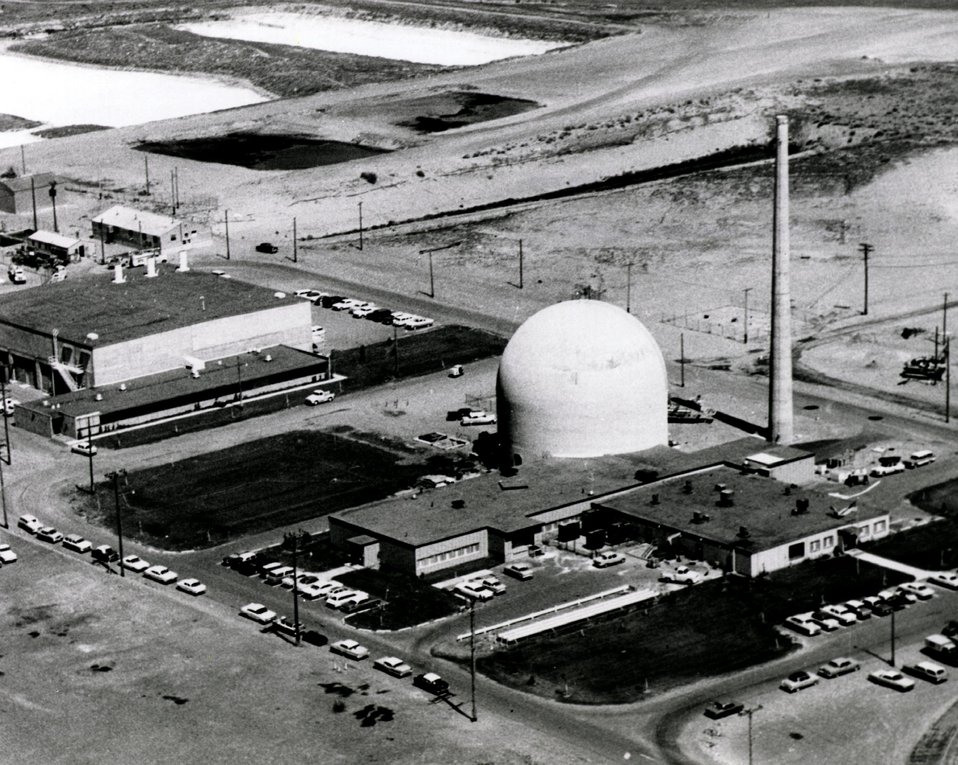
Plutonium Recycle Test Reactor...General view of the PRTR at Hanford. Circa 1964.